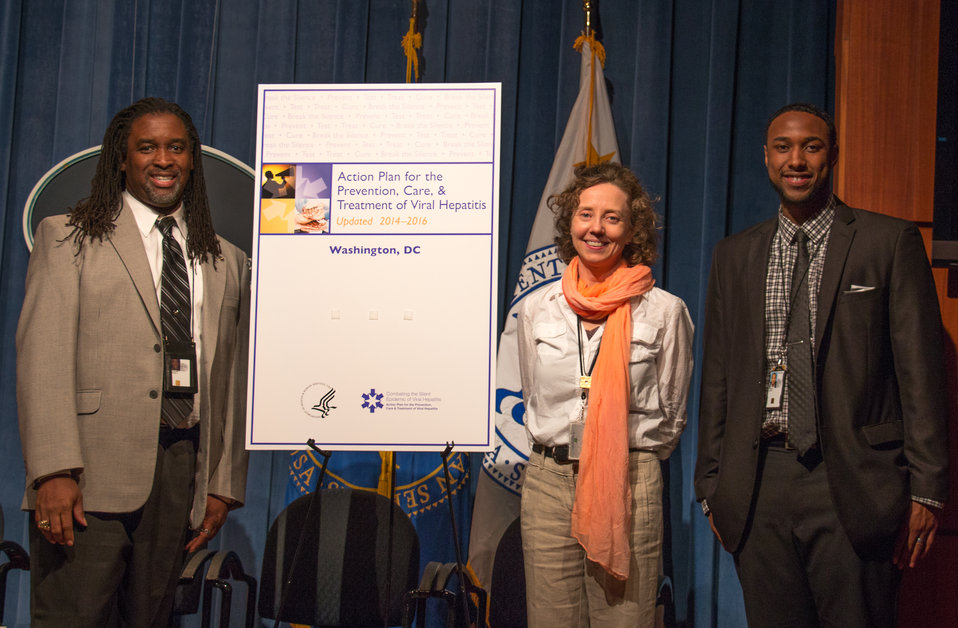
VHAP Launch (480 of 511)